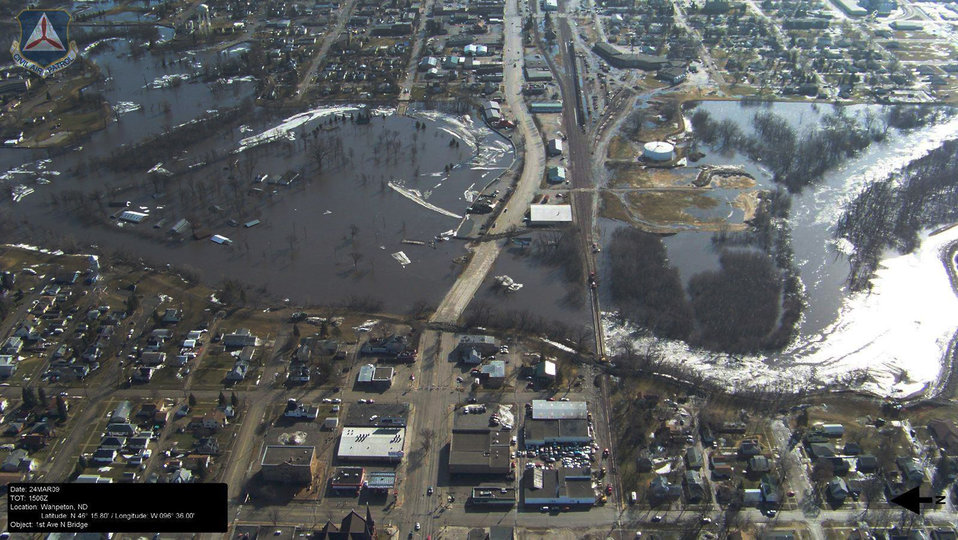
Auxiliary officials play important role in North Dakota floods

This visual image from Air Force Auxiliary officials show damage done by flood waters along the Red River in North Dakota. Air Force Auxiliary officials have flown more than 30 sorties and captured hundreds of visual images to give emergency responders and on-scene commanders the most up-to-date picture of the affected areas.